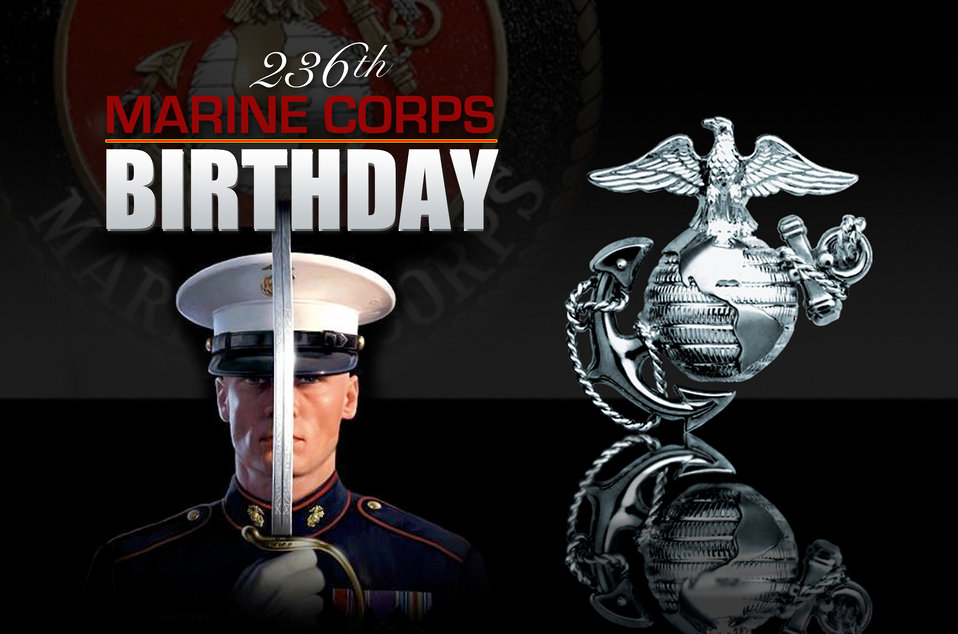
236th Marine Corps Birthday